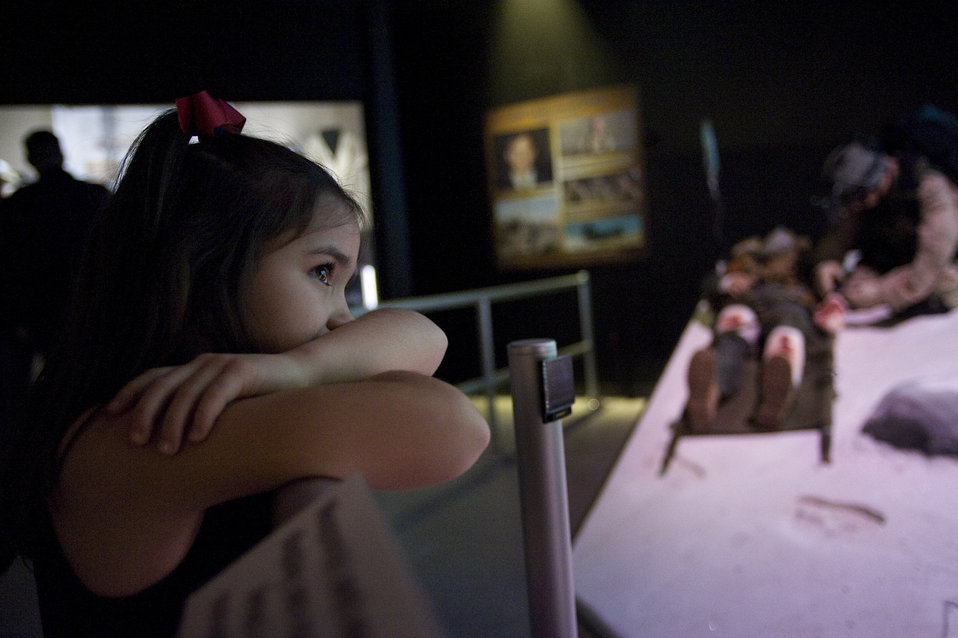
Museum opens exhibit dedicated to 'Warrior Airmen'

Kearsten Miller, 7, watches a interactive video showcasing her father, Master Sgt. Keary Miller during the opening of the Warrior Airmen Exhibit Jan. 12 at the National Museum of the U.S. Air Force at Wright-Patterson Air Force Base, Ohio. Sergeant Miller is a pararescuman who fought during the Battle of Takur Ghar, the deadliest entanglement of Operation Anaconda in Afghanistan.